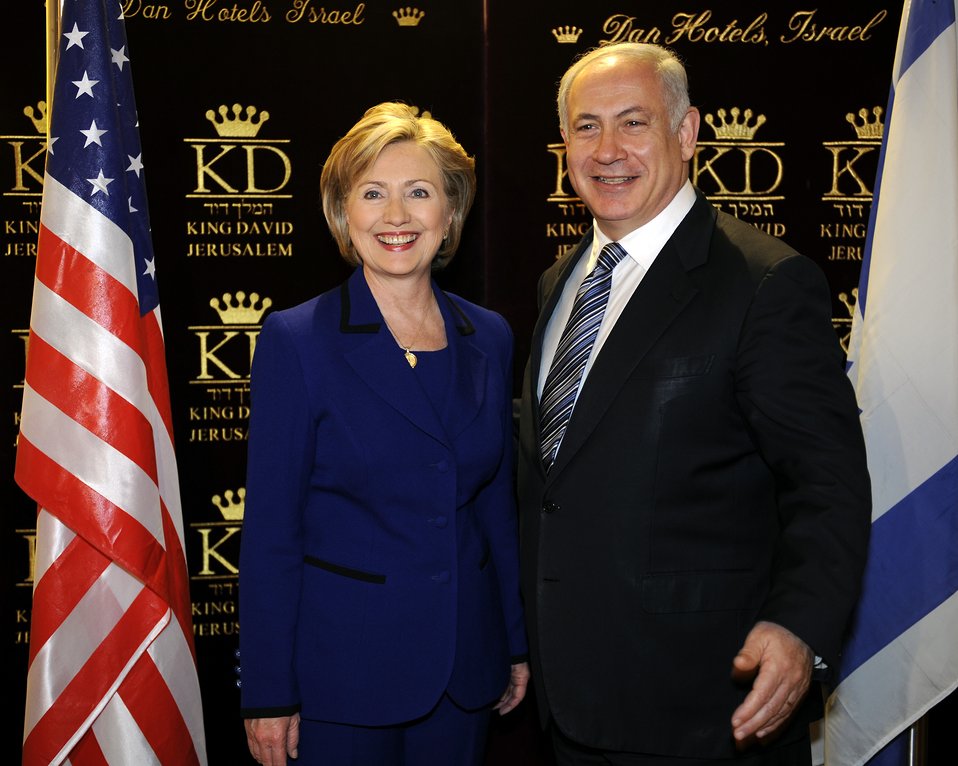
Secretary Clinton before her meeting with Israeli Prime Minister-Designate Benyamin Netanyahu at the King David Hotel, Jerusalem March 3, 2009.